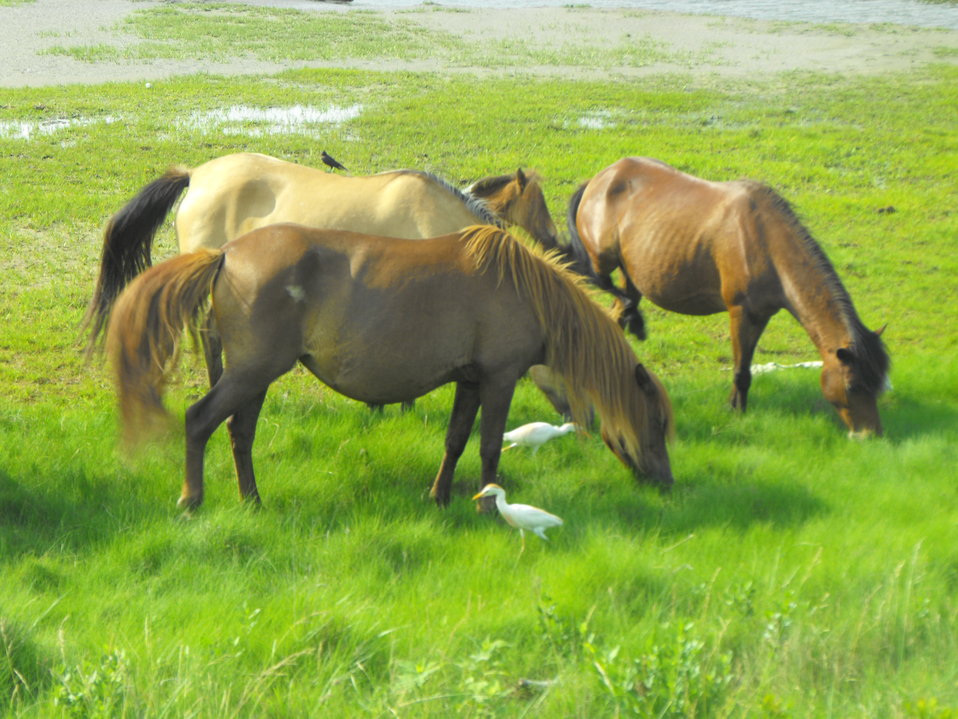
Chincoteague ponies and cattle egrets off the Service Road at Chincoteague National Wildlife Refuge.